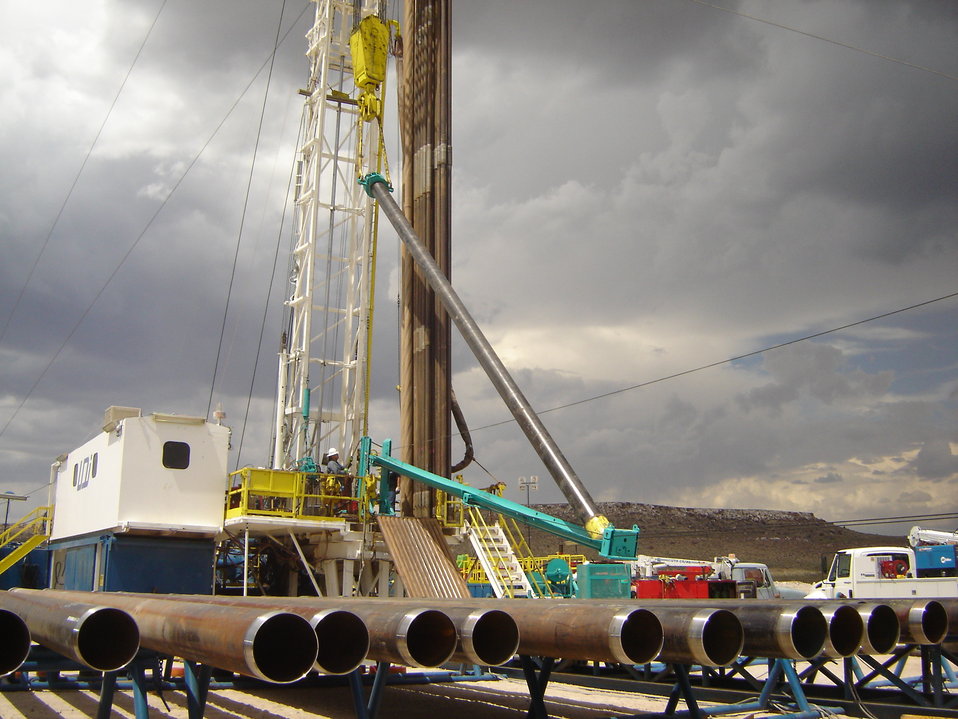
Digging Deeper into Nevada Test Site Groundwater

Casing is guided into position for installation in well ER-20-8 located on Pahute Mesa at the Nevada Test Site.

Well construction, sampling, and data logging at the ER-20-8 is expected to be complete by August 13, 2009. However, as mobilization begins for drilling at the next site, ER-EC-11, the information gathered from ER-20-8 will undergo further review and analysis. All of the nine wells drilled over the next three years (including one more funded by the Recovery Act) will enhance the existing network of more than 115 wells on and off the Nevada Test Site which are sampled regularly to ensure the protection of the public.